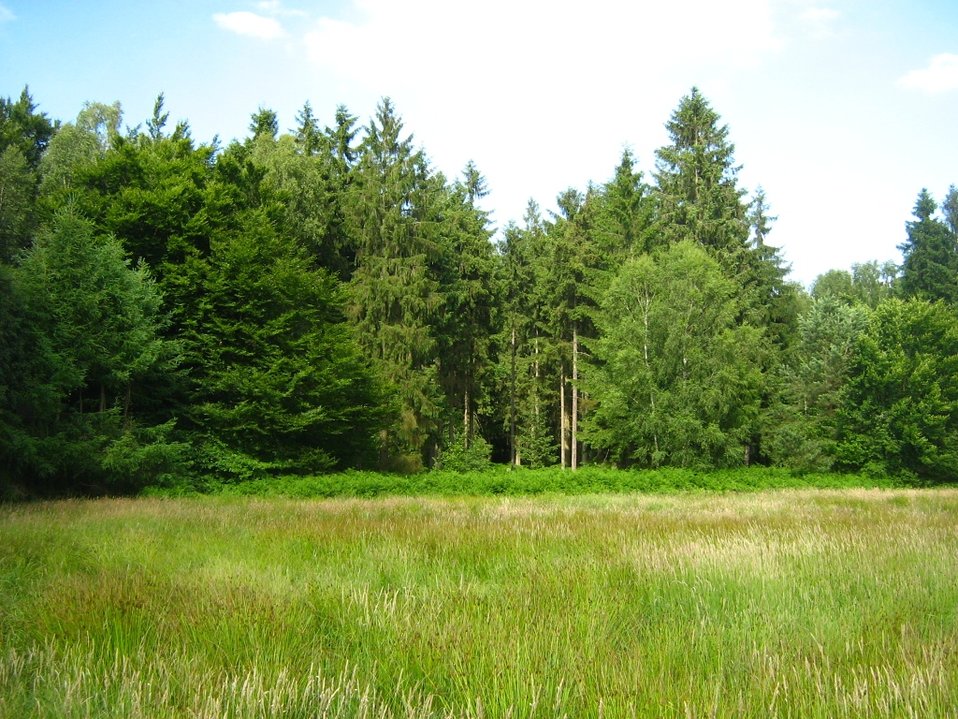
Deutsch: Der Dänschenburger Wald (Stadt Marlow, Mecklenburg).